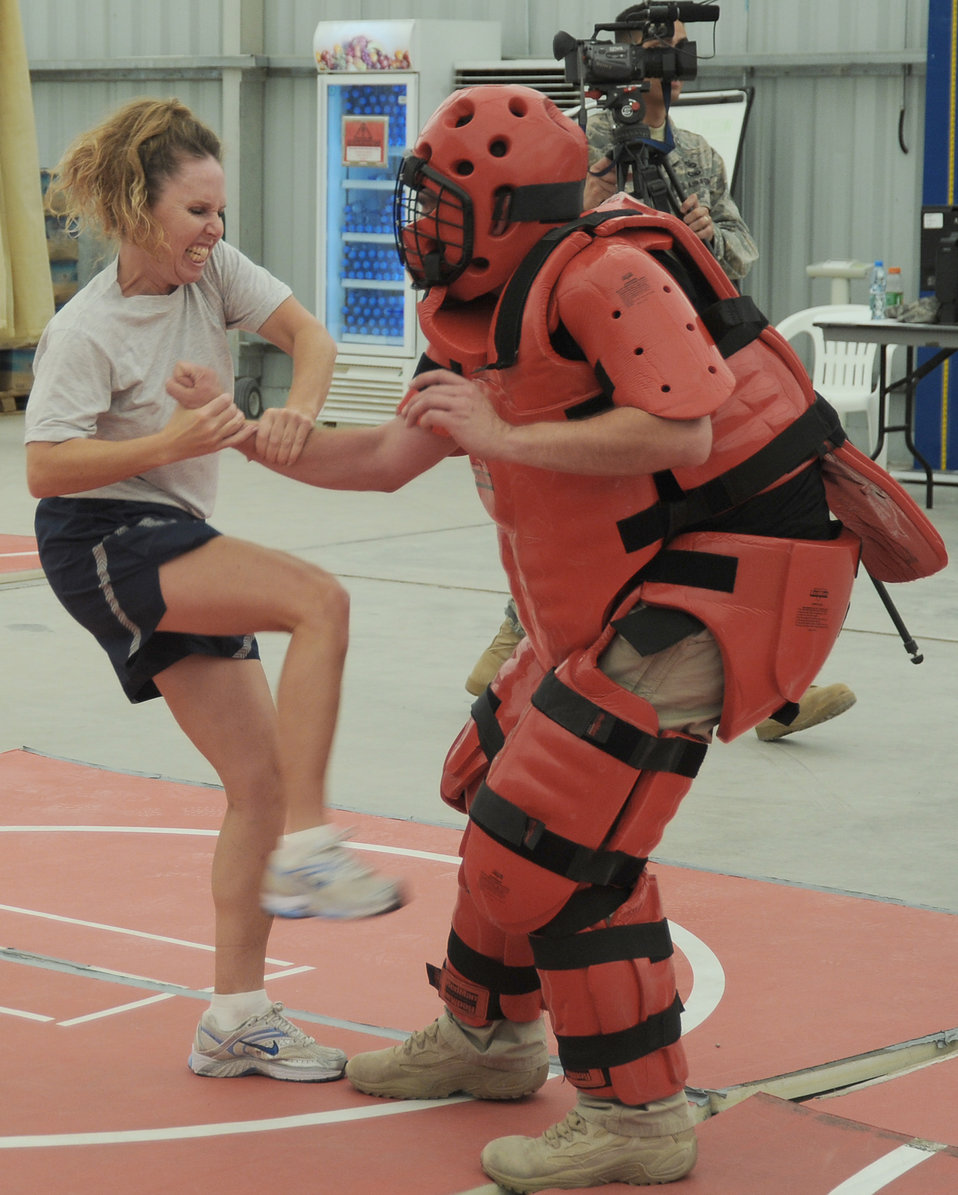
Getting defensive

Capt. Sherry Souriolle tries to kick the